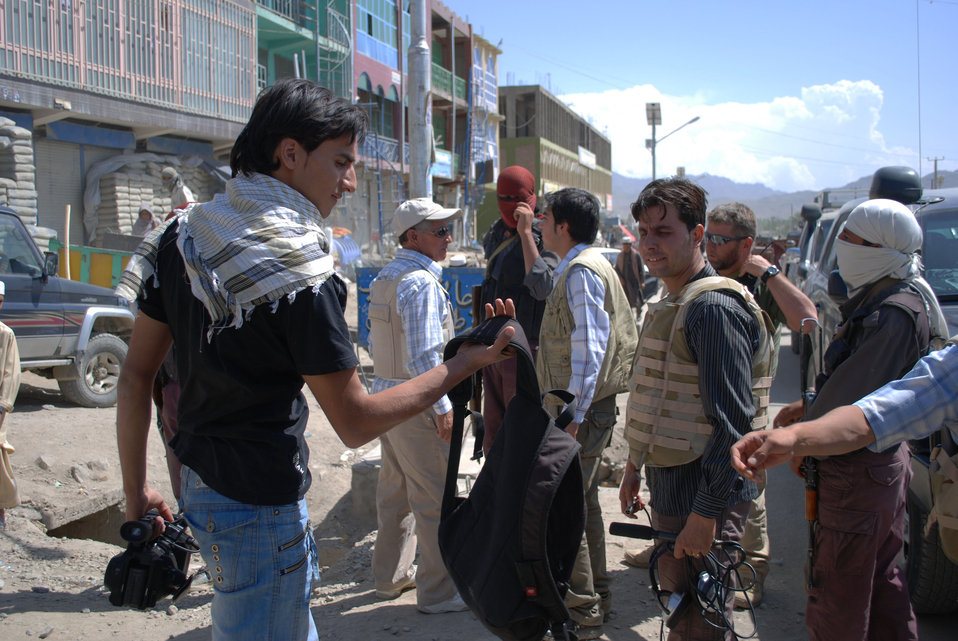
'On the Road' in Paktya Province